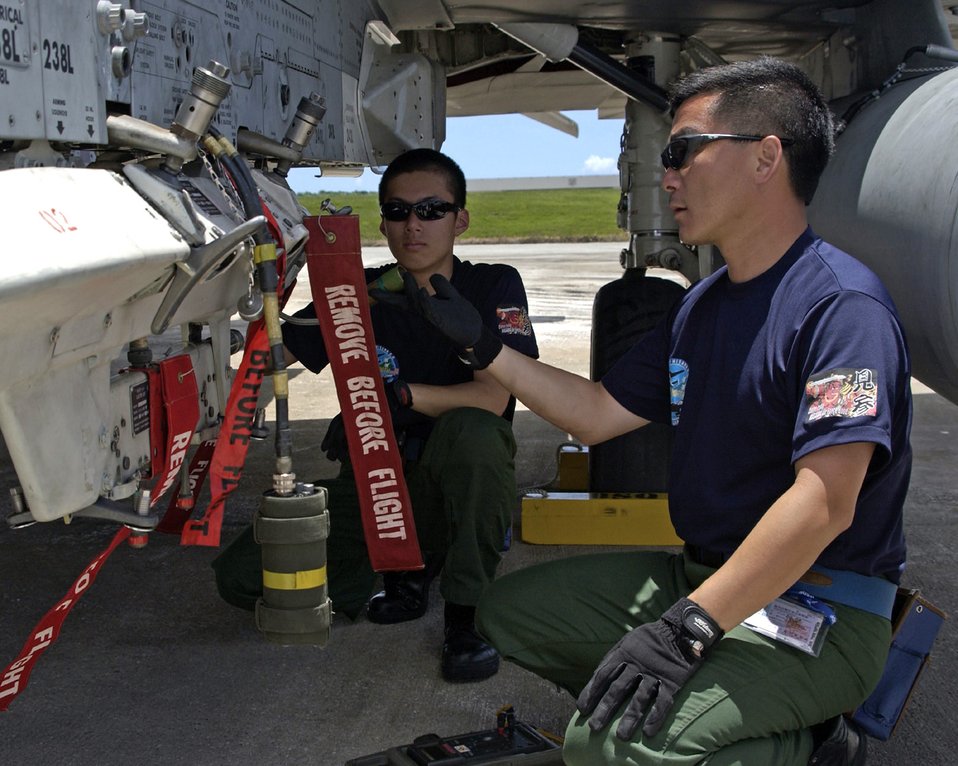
Cope North bilateral exercise wraps up in GuamCope North wraps up, a success

ANDERSEN AIR FORCE BASE, Guam -- Japanese air self-defense force maintainers prepare an F-4EJ Kais for a mission during Cope North here. The bilateral exercise included about 300 U.S. Airmen and about 250 Japanese participants.